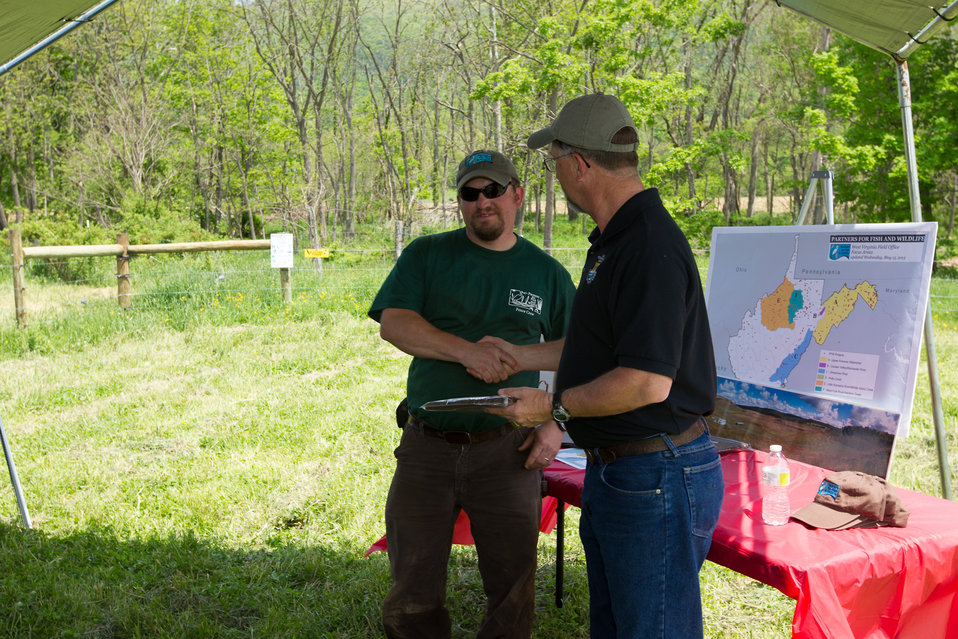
Celebrating 1 Million Feet of Conservation Fence in WV

Partners for Fish and Wildlife Program